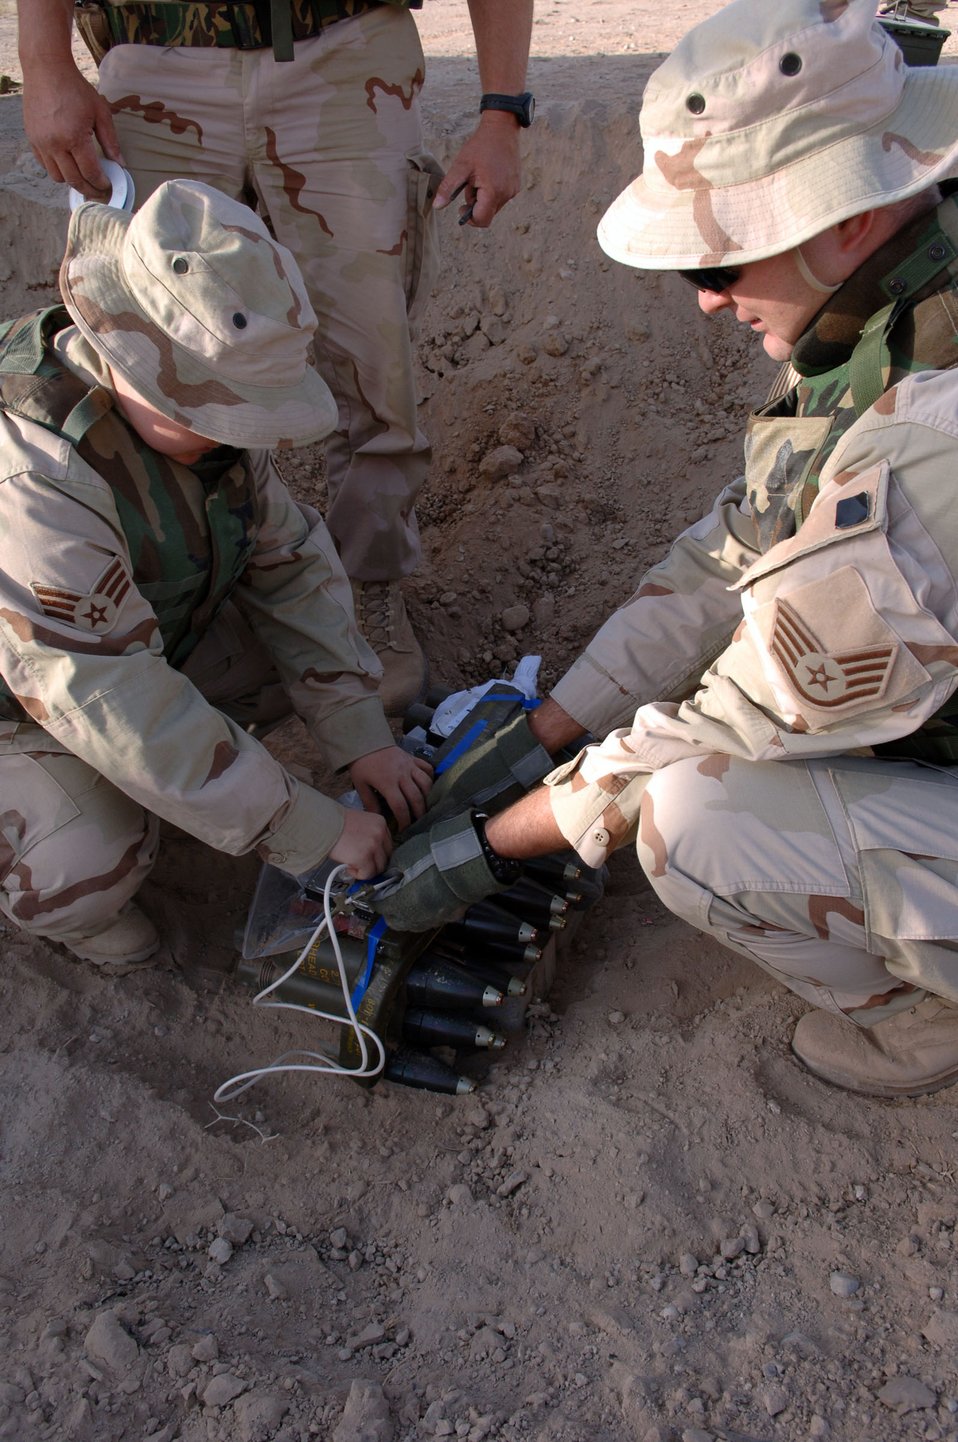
Blasting cap

KANDAHAR, Afghanistan -- Staff Sgt. David Baker, right, shows Senior Airman Amber East, left, how to put a blasting cap into some C4 plastic explosive. The C4 is placed on ammunition to be destroyed at the range here. They are assigned to the 451st Air Expeditionary Group